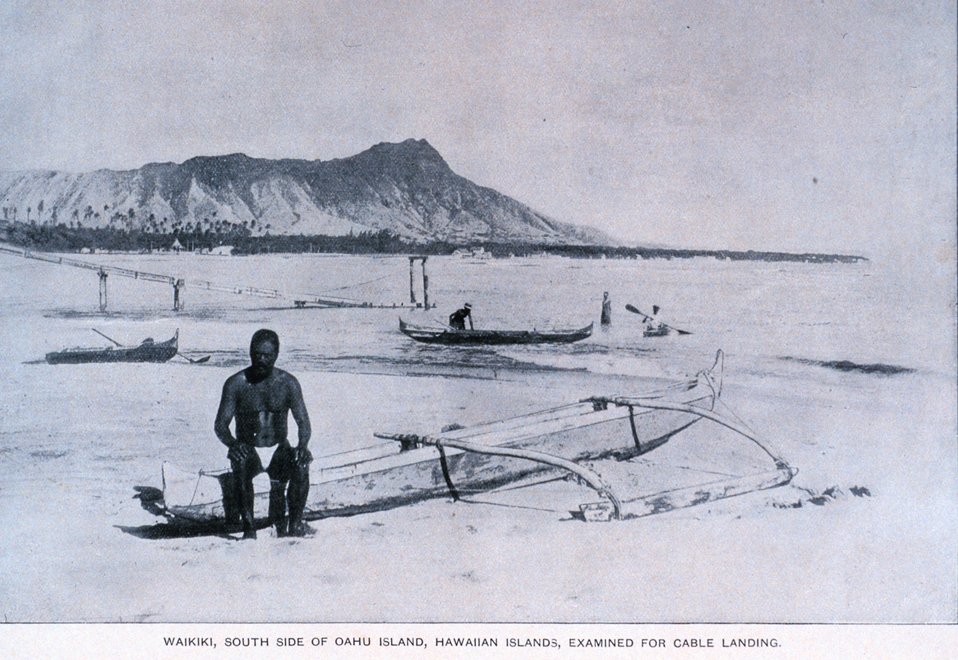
Native Hawaiian sitting on outrigger canoe with Diamondhead in the background. 'Coral Reefs of the Hawaiian Islands' by Alexander Agassiz. April 1889. Bulletin of the Museum of Comparative Zoology, at Harvard College. Vol. XVII. No. 3. Library Call Number G161 A26.